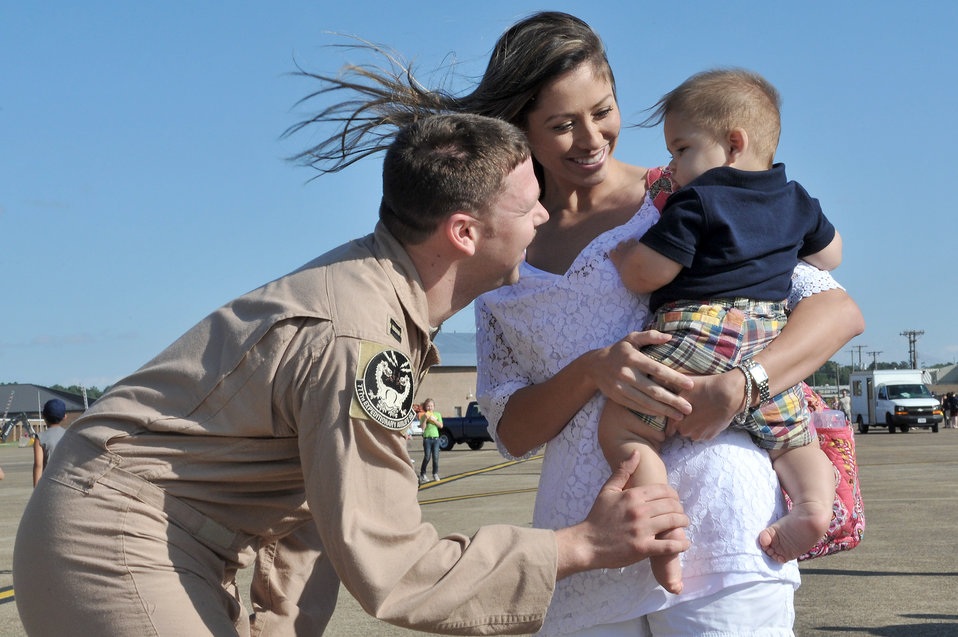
Returning home

Capt. Christopher Lang is greeted May 13, 2001, by his wife, Emmalee, and son, Luke, at Little Rock Air Force Base, Ark. Captain Lang is assigned to the 61st Airlift Squadron.